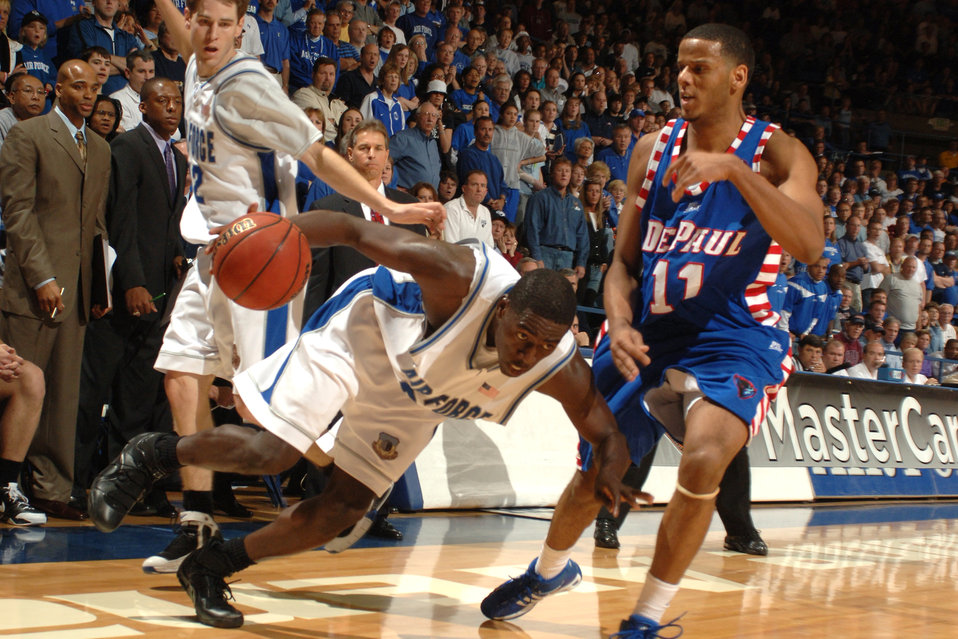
Falcons reach NIT final four in NYC

Falcon forward Dan Nwaelele eyes a path past DePaul's Sammy Mejia March 21 at Clune Arena. Nwaelele scored 10 points in Air Force's 52-51 win and a berth in the NIT semifinals in New York's Madison Square Garden March 27 against Clemson.